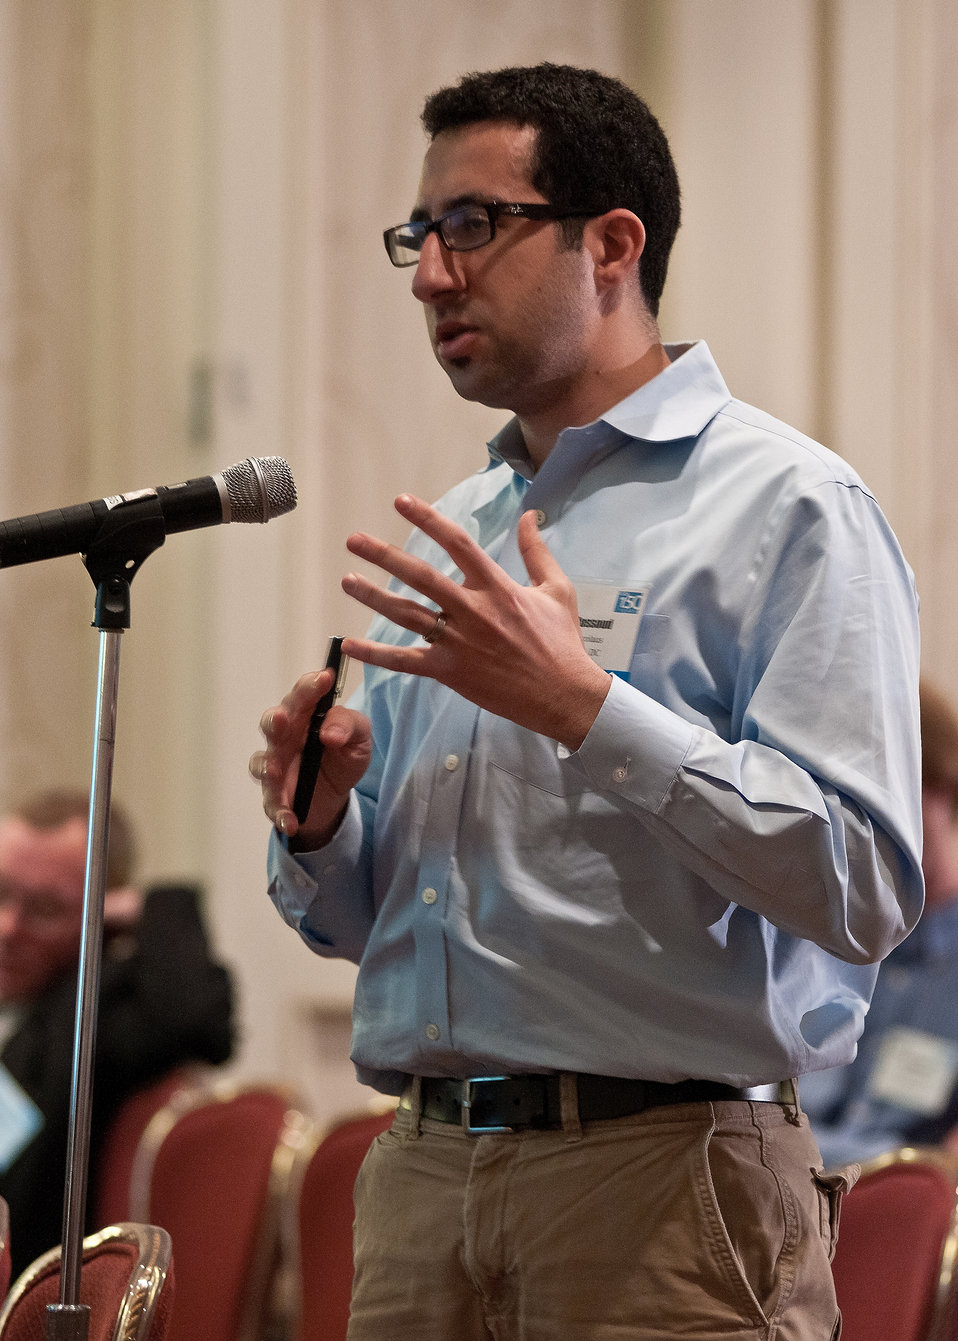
Paul Massoud, CFA, Vice President Stifel Nicolaus Equity Research Washington, D.C., questioned speakers at the Agricultural Financial Markets and Investment afternoon breakout session at the 2012 Agricultural Outlook Forum, “Moving Agriculture Forward, Growing, Innovating and Celebrating 150 Years” held at the Crystal gateway Marriott Hotel Arlington, Virginia, Friday, February 24, 2012. Massoud attended the forum to get a better understanding of farm income and the ability to spend money on inputs. The session focused on patterns of financial investment in United States agricultural assets, changes in types of lenders serving the agriculture sector and the economics of land prices.